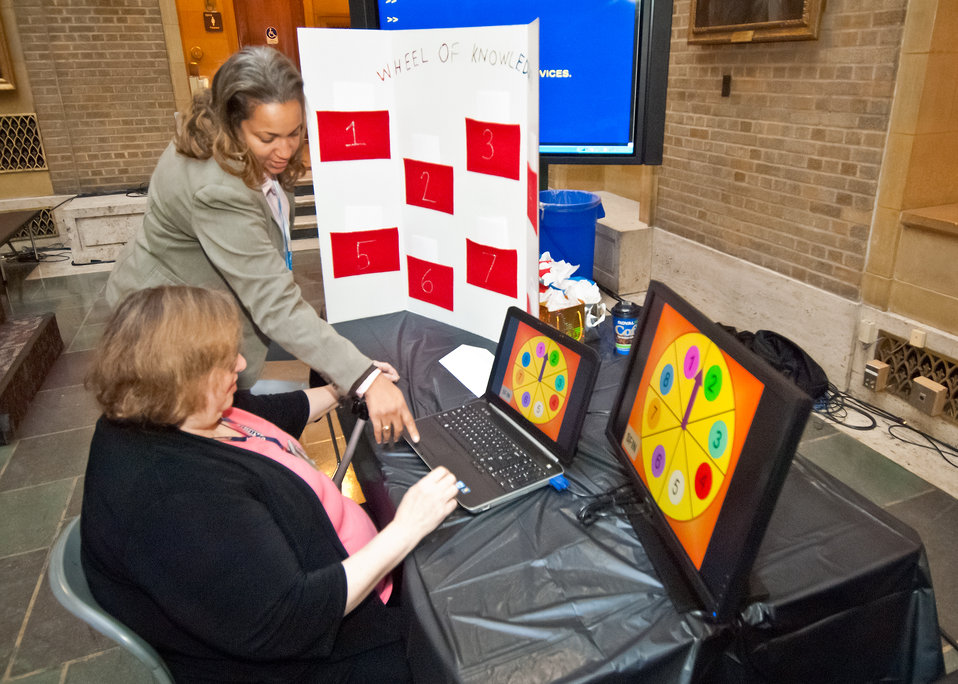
Food Safety Inspection Service employee Kyna Fernandez assists Farm Service Agency employee Barbara Beitscher, with the, “Wheel of Knowledge”, a game of knowledge on Section 508 Disability Awareness at the U. S. Department of Agriculture (USDA) Section 508 and Disability Awareness Program in Washington, DC, on Monday, Oct. 31, 2011. Sponsored by the Office of the Chief Information Officer, the theme of the event was, “Turning the Key to Unlock and Eliminate Barriers by Providing Accessibility to All.” Section 508 applies to the development, procurement, maintenance or use of electronic and information technology allowing accessibility and awareness to promote inclusiveness to employees and the public with disabilities to information technology managed by the Federal government. Section 508 is part of the USDA’s Cultural Transformation Initiative to hire more employees with disabilities.